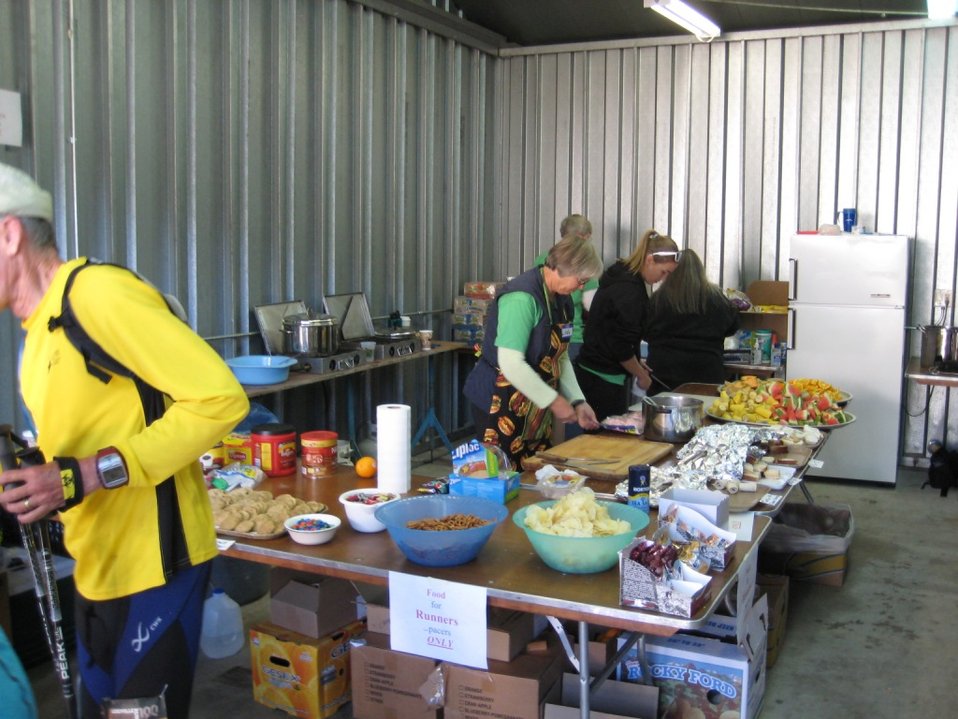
Food serving station

Leadville Trail 100 run food serving station. Leadville National Fish Hatchery served as aid stations for miles 24 and 76.